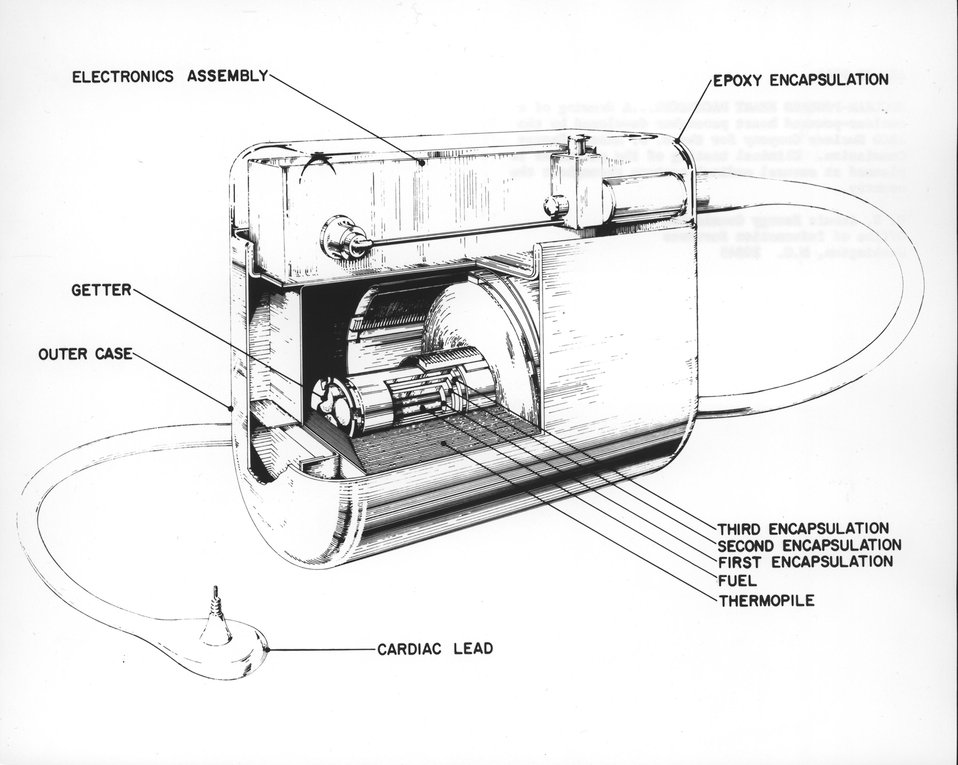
A drawing of a nuclear-powered heart pacemaker developed by the ARCO Nuclear Company for the U.S. Atomic Energy Commission. Circa 1973.